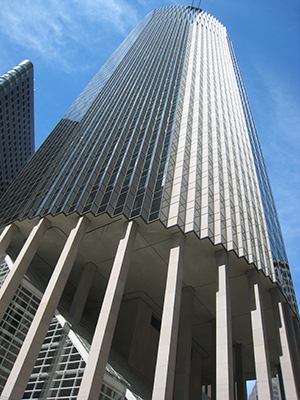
Ken Papai, http://www.kenpapai.com/, fair use to image is OK, photo by K. Papai